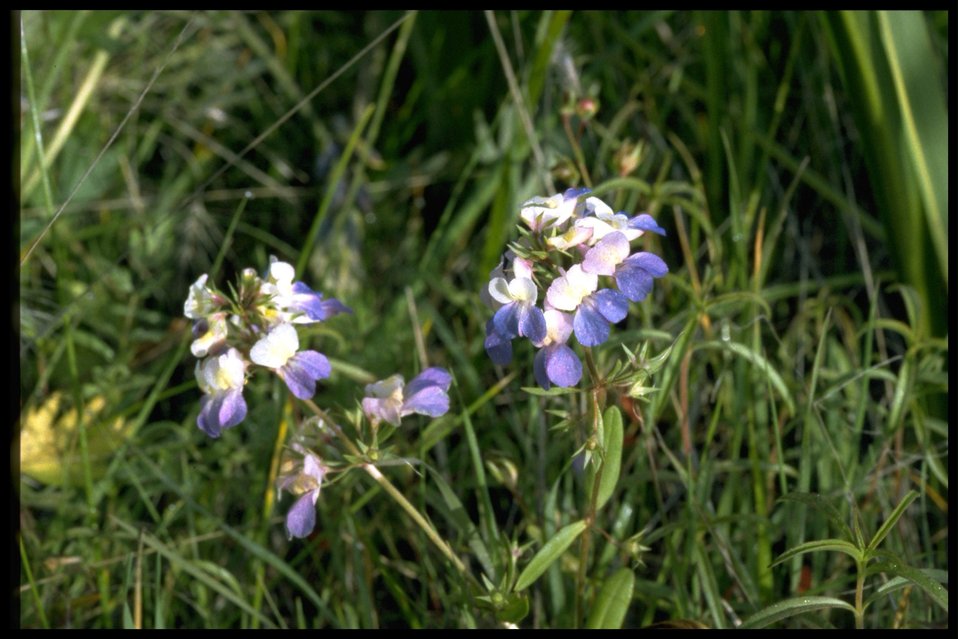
Medium shot of Collinsia grandiflora.